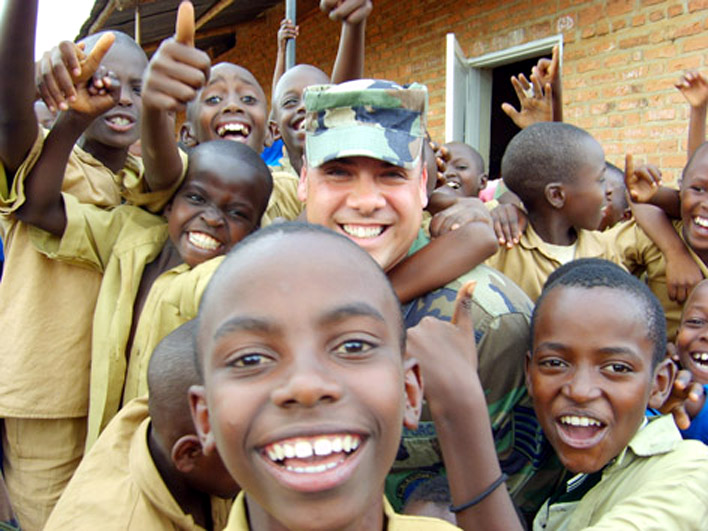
Ramstein Airmen connect with Rwandan children

Schoolchildren surround Tech. Sgt. Hector Nieves at their Kigali, Rwanda, school where Airmen from Ramstein Air Base, Germany, delivered school supplies, blankets and clothing donated by the Kaiserslautern Military Community. Sergeant Nieves is assigned to the 86th Air Mobility Squadron.